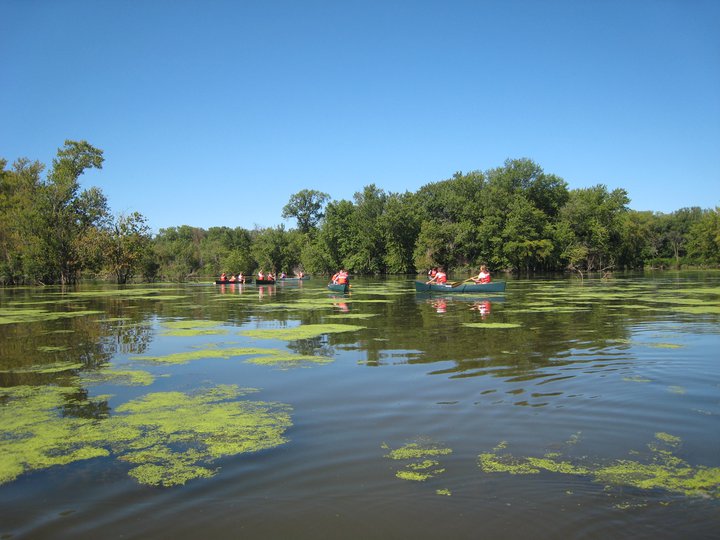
paddling the Mississippi River

Upper Mississippi River National Wildlife Refuge
Photo: USFWS
The Upper Mississippi River National Wildlife Refuge, created in 1924, was one of the first refuges intended primarily for the protection of migratory waterfowl. Lying in four states - Wisconsin, Minnesota, Iowa and Indiana - it protects essential habitat along the Central Flyway.